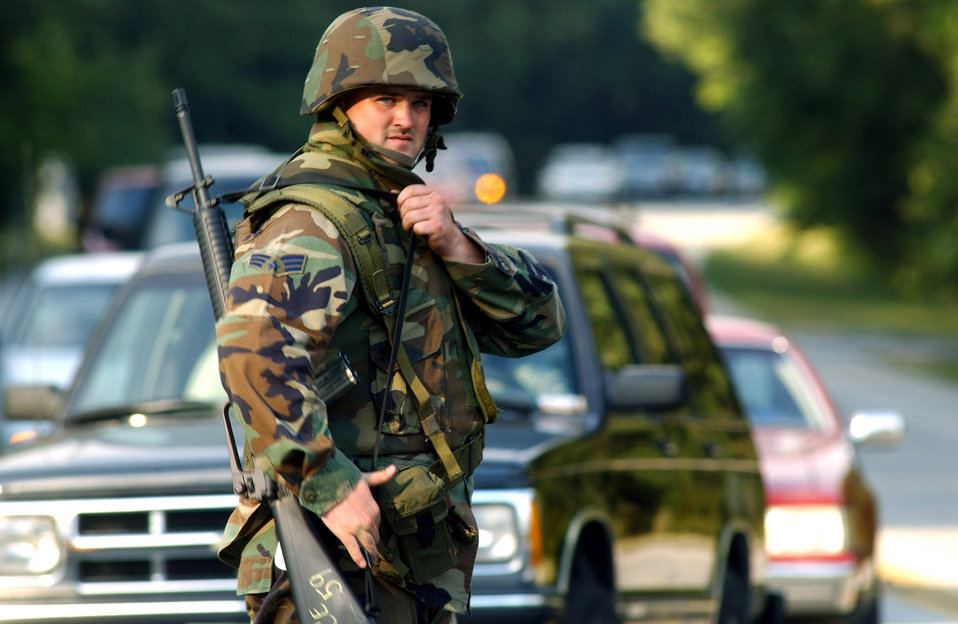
Security

ANDREWS AIR FORCE BASE, Md. -- A security forces augmenter keeps a watchful eye on inbound traffic here, in the wake of terrorist attacks on our nation.